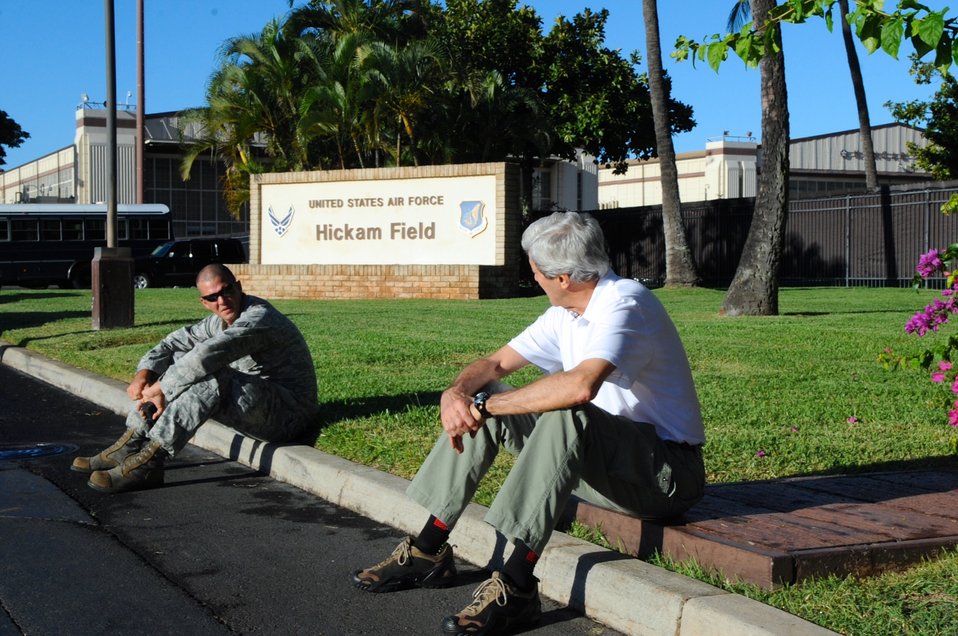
Secretary Kerry Relaxes in the Sun During a Refueling Stop

U.S. Secretary of State John Kerry shares a curb and the Hawaiian sunshine with a member of the U.S. Air Force during a refueling stop at Hickam Air Force Base en route to Washington, D.C., on December 18, 2013.